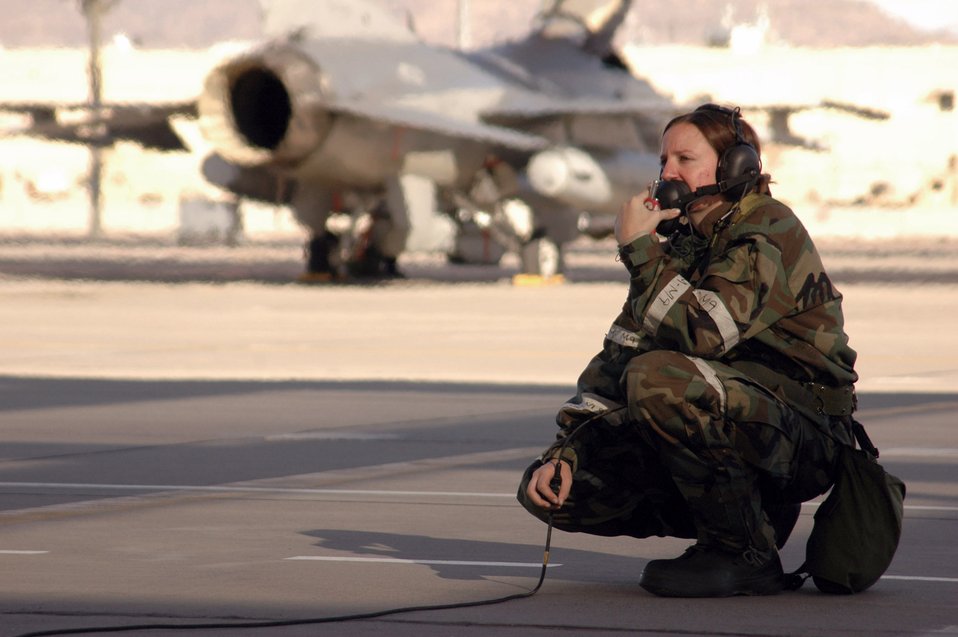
Exercise Coronet White

Crew chief Senior Airman Marci Salmon talks to an F-16 Fighting Falcon pilot using the ground communication headset as part of a pre-flight check Nov. 2 at Kirtland Air Force Base, N.M. The pre-flight check is run to ensure the aircraft is ready to take off.